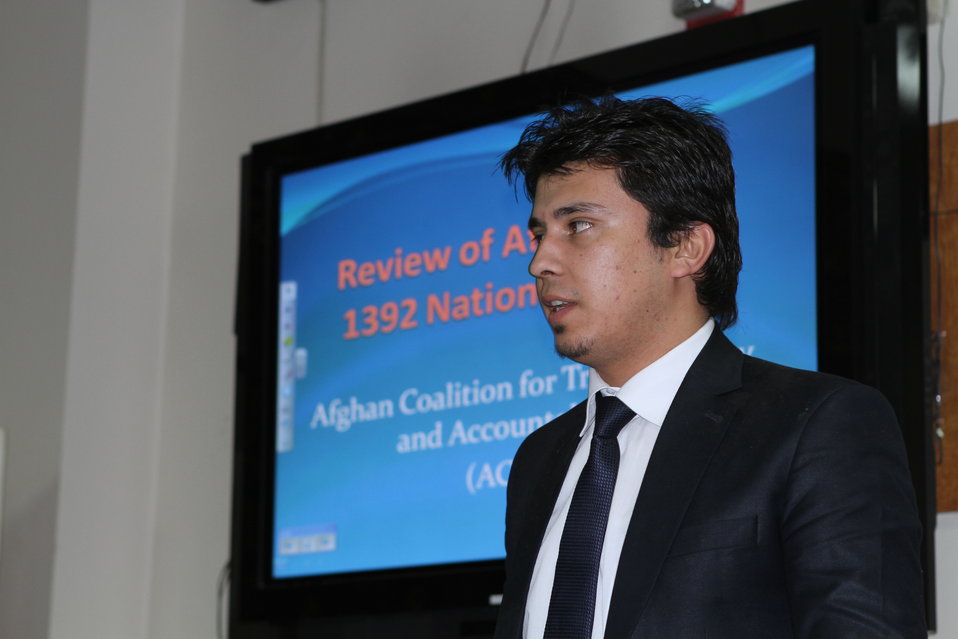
Presentation of the ACTA Civil Society analysis of the FY 1392 Afghan national budget